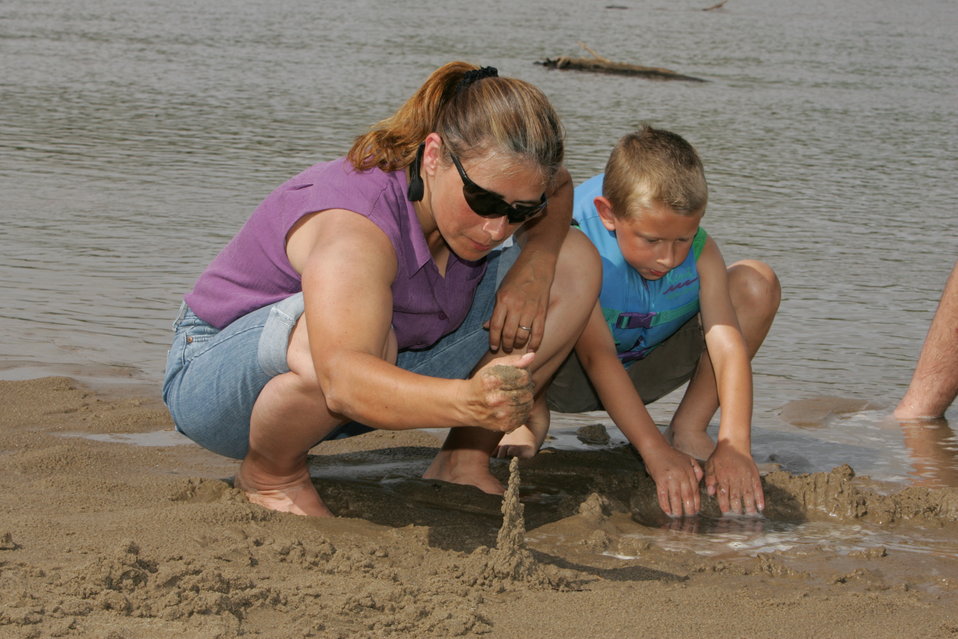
A simple sand tower.

Playing in the sand by the river makes coming to the refuge a blast.